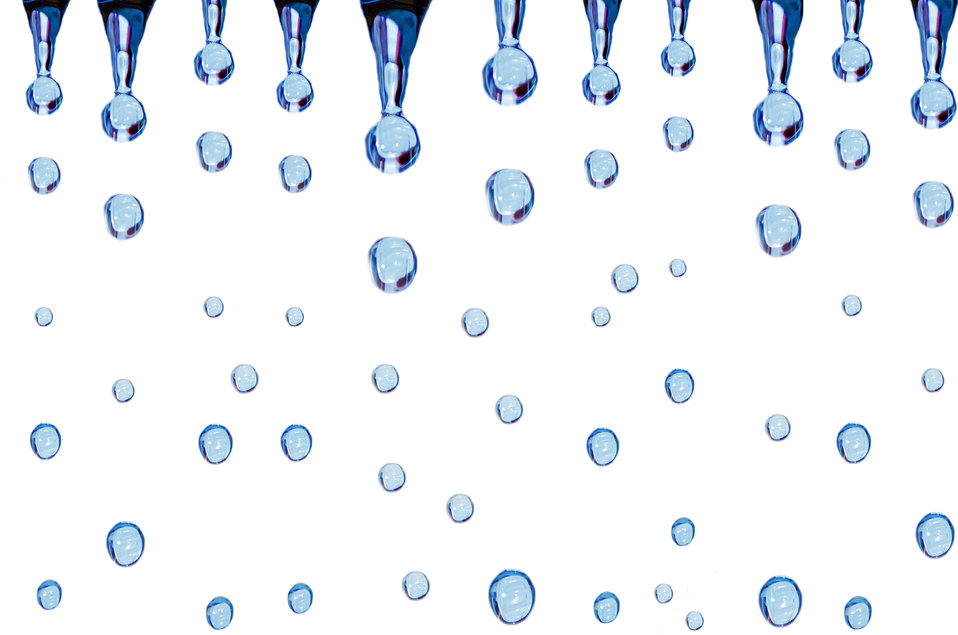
Water drops background.